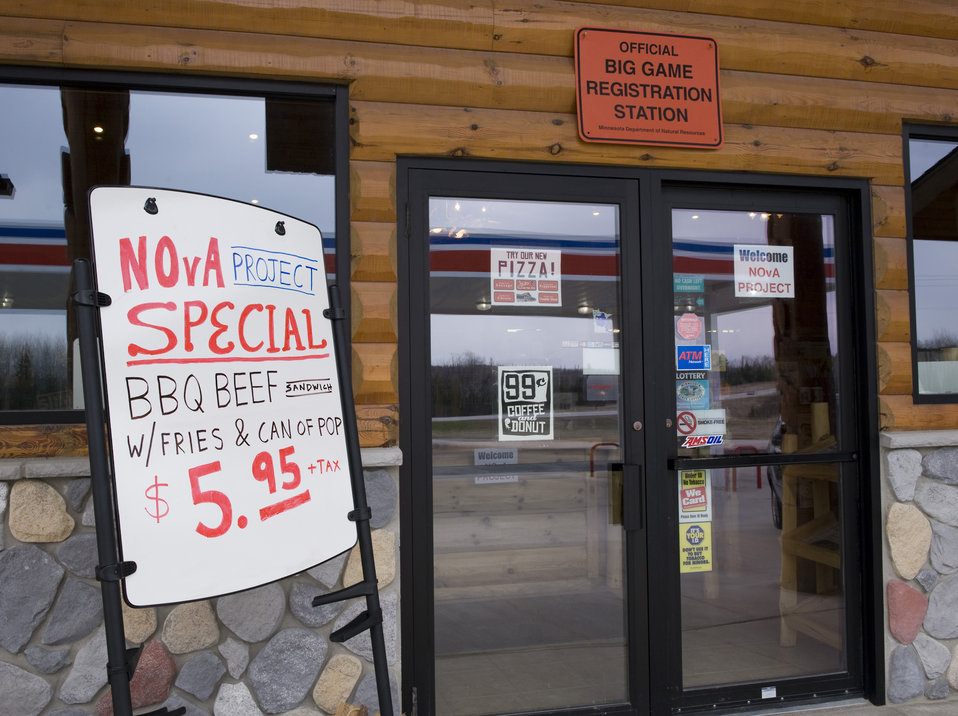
SC Recovery Act Photo 2N